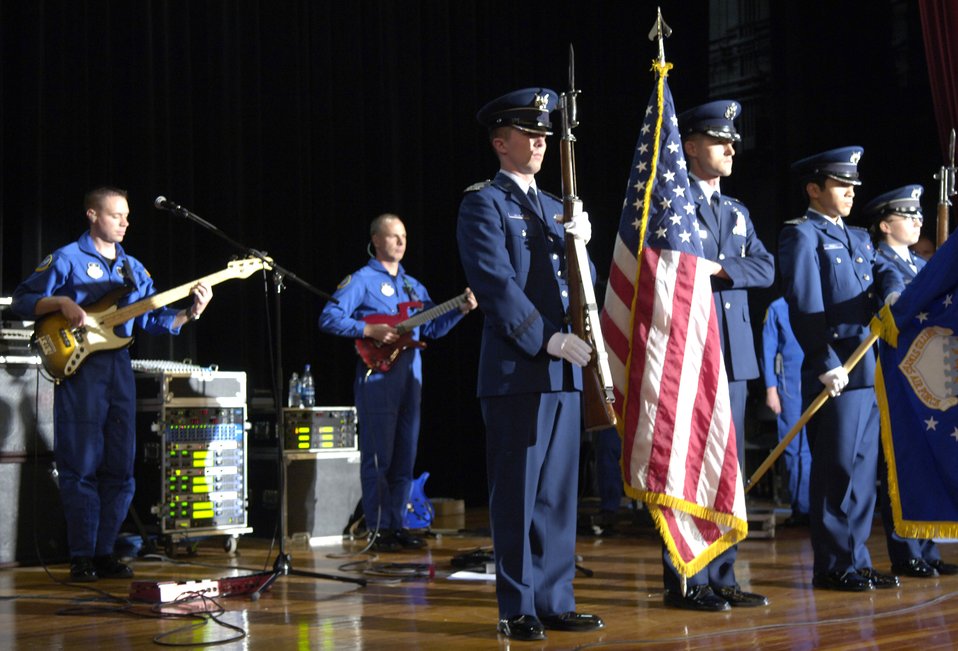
Academy Band

The U.S. Air Force Academy Honor Guard present the colors at Mamaroneck High School in New York, Nov. 22 as the Academy's band, Blue Steel, plays the National Anthem. Blue Steel performed a concert at the school as part of week-long events in New York celebrating the Air Force's 60th Anniversary. The band will also perform in the Macy's Thanksgiving Day Parade and make an appearance on ABC's Good Morning America.